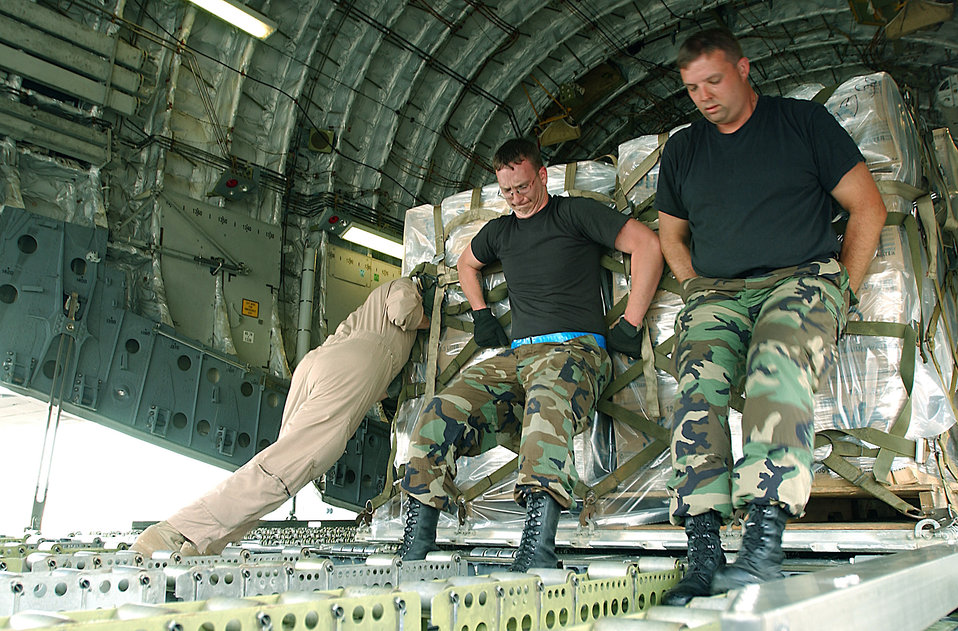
Hurricane Charley relief

DOBBINS AIR RESERVE BASE, Ga. -- Airmen of the 437th Airlift Squadron from Charleston Air Force Base, S.C., load relief supplies onto a C-17 Globemaster III on Aug. 14. They are supporting Hurricane Charley relief operations being conducted by the Federal Emergency Management Agency in Florida.